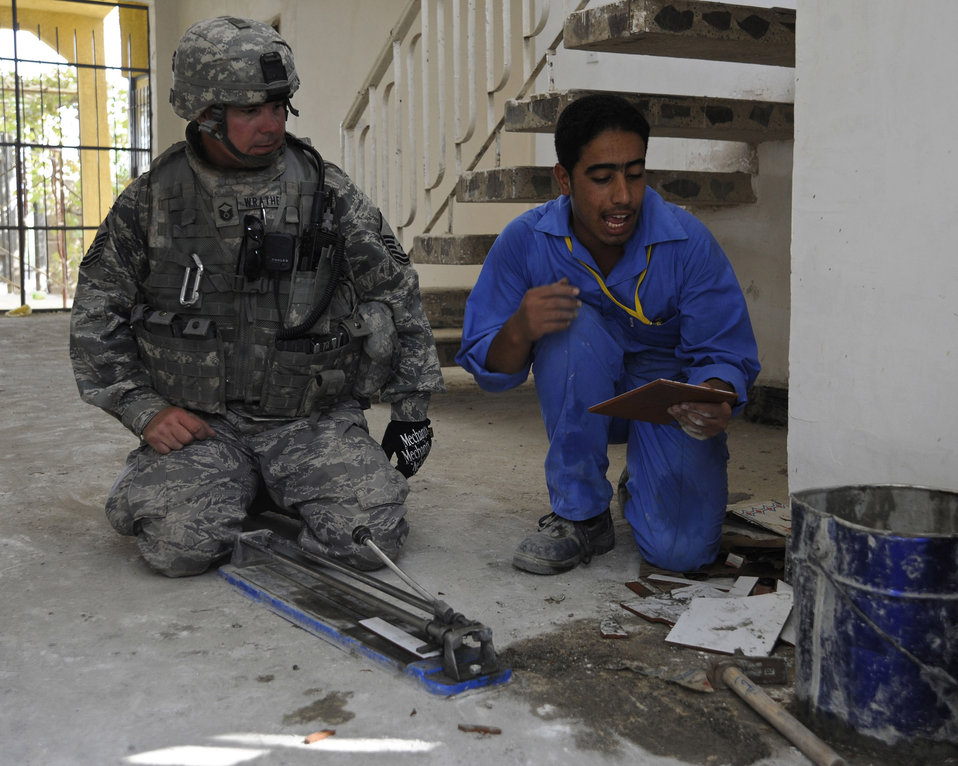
RED HORSE Airmen give Iraqis reason for hope

Master Sgt. Patrick Wrathell shows an Iraqi student worker how to cut tile at Hawr Rajab, Iraq, Aug. 27. Sergeant Wrathell is the first sergeant and the NCO in charge of downtown operations for 557th Expeditionary RED HORSE Squadron.